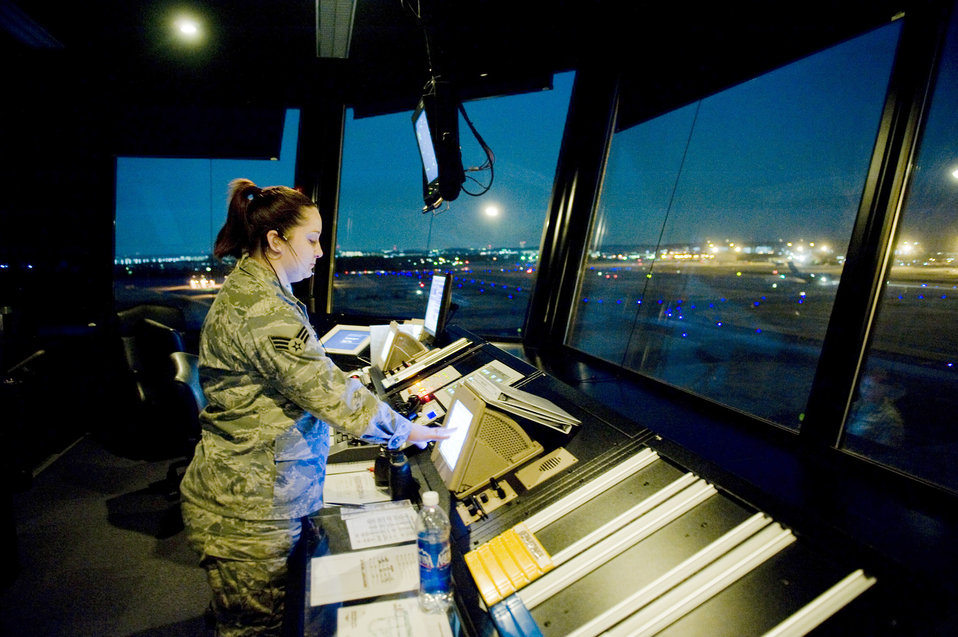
Yokota ATC Operation Tomodachi

Senior Airman Lyndsi Tullos communicates with the maintenance operation center about flightline operations March 24, 2011, at Yokota Air Base, Japan. Yokota AB's flightline has received more than triple the normal amount of aircraft due to Operation Tomodachi. The military and civilian aircraft have been from multiple nations carrying supplies, personnel and equipment in direct support of bringing relief efforts and trying to minimize human suffering following an earthquake and tsunami March 11. Airman Tullos is a 374th Operations Support Squadron air traffic controller.